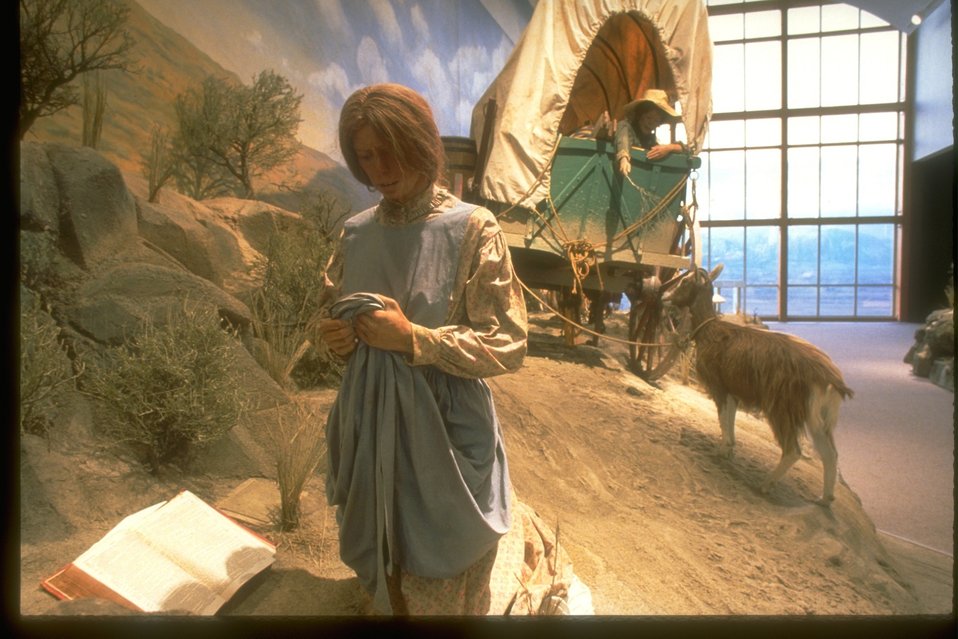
Early settlers on the Oregon Trail with a grieving woman reading the bible and in the background a young boy hanging out the covered wagon reaching to feed a goat. Replica in the NHOTIC.